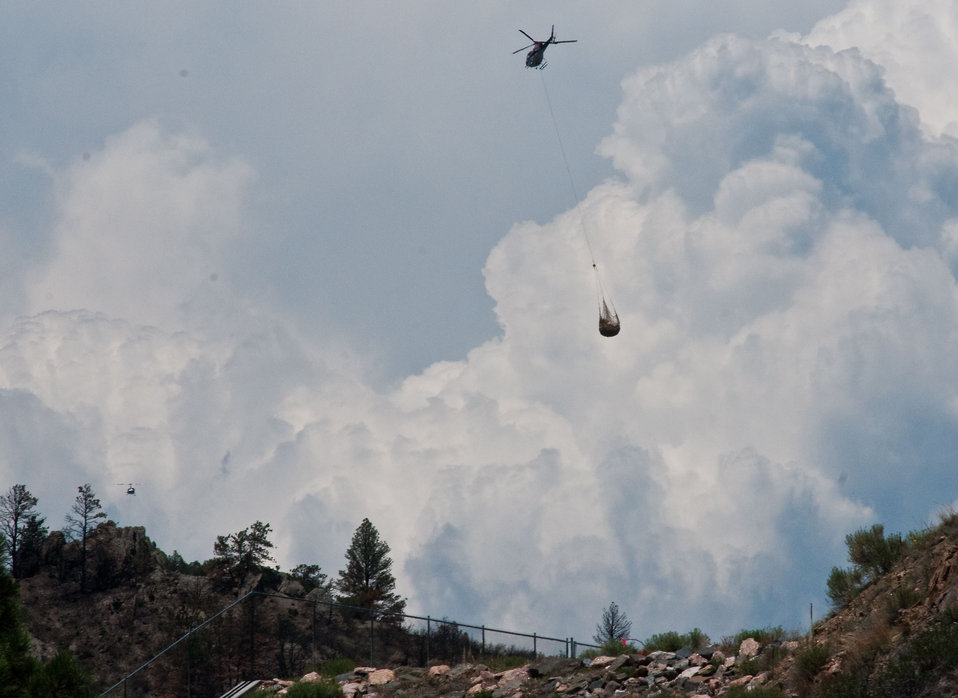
Helicopters come and go in the continuing aerial application of straw to mitigate soil and ash runoff from the mountainous terrain leading to Seaman Reservoir, drinking water resource for the City of Greeley, on Friday, July 20, 2012, near Fort Collins, Colorado. A Bell 204 (a.k.a UH-1H, 2-blade rotor) and A-Star Model B (3-blade rotor) take turns picking up loads of straw from the landing zone at the foot of the reservoir spillway. The 100-150- cables hold and release loads of certified straw weighing 1,400 – 2,000 pounds. Forest service lands received straw, while private and other lands receive a seed mix and straw to promote ground cover plant growth on ash-covered lands. In total, 1,800 tons of straw will be applied during the 14-day operation. One quarter of the cost was paid by the City of Greeley and the U.S. Department of Agriculture funded the remainder. The Hewlett Gulch Fire was started by a camper’s alcohol stove, on May 14, at the saddle of a picturesque mountain ridge along the Hewlett Gulch Trail of Poudre Canyon, in the Roosevelt National Forest, 60 miles north of Denver. At it’s more than 400 firefighters were battling fires being pushed by 50 mph winds that helped blacken over 12-square-miles of dry ground cover, brush and trees. Many of the trees were already dead and tinder dry from beetle-kill. The water in the reservoir remains clean and clear, while downstream water flow has gone from famous Colorado clear water to nearly black flows of water heavily laden with ash, silt, and burnt debris that recent thunderstorms have already washed down from the mountainsides.